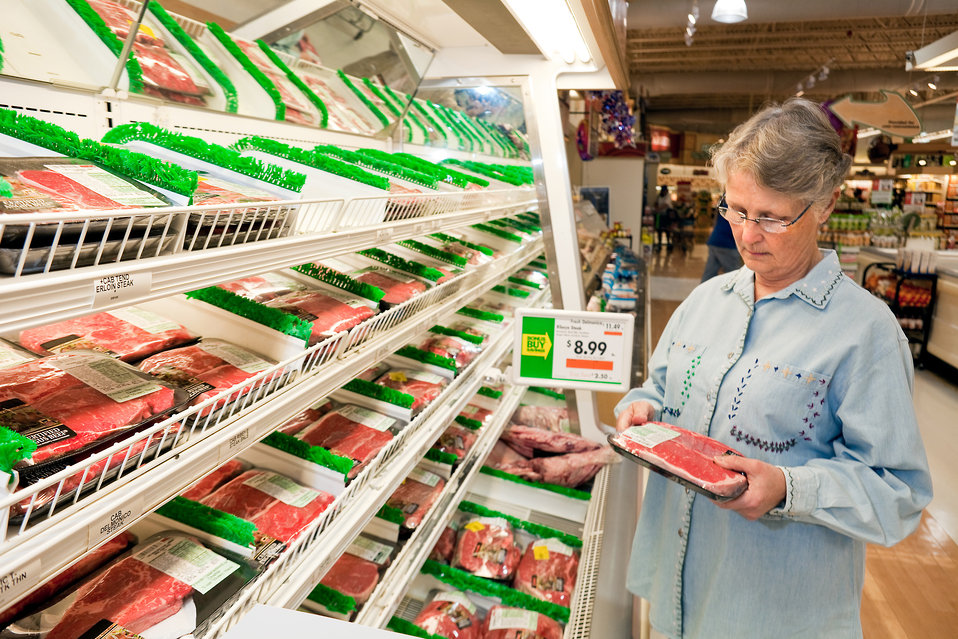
A shopper examines a package of meat in a grocery store for freshness on Jan. 17, 2012. Consumers consider bright-red beef or bright-pink pork as a mark of freshness and quality. U.S. Department of Agriculture (USDA) Agricultural Research Service (ARS) scientists have developed models using Vis/NIR technology that allows companies to identify beef and pork suitable for retail markets.